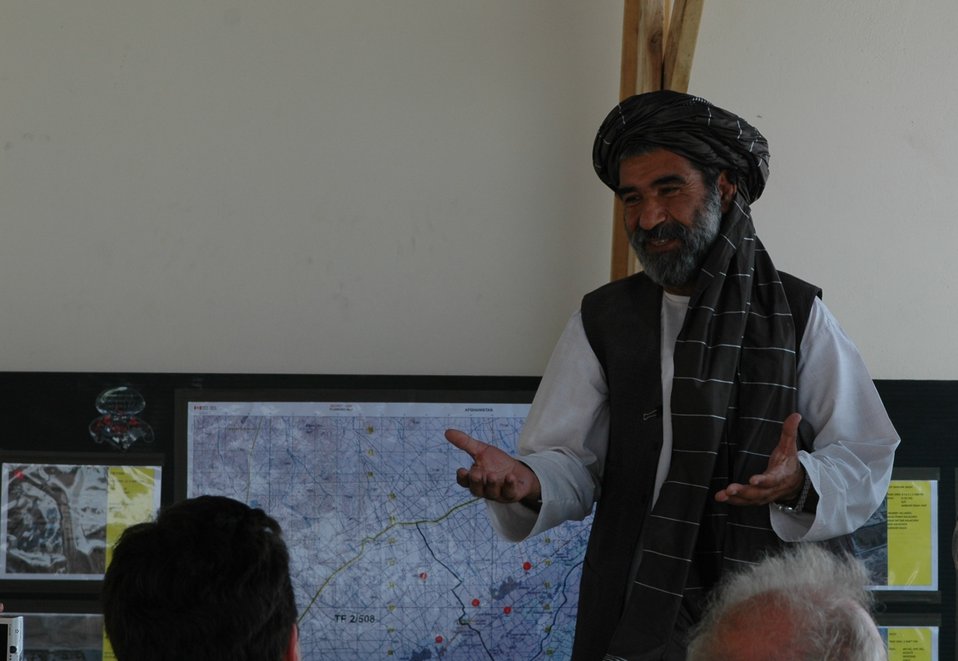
CODEL Berman